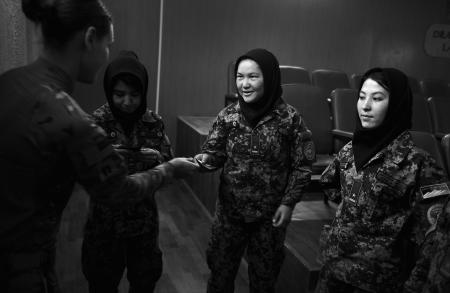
Coalition training

U.S. Air Force Capt. Vanessa Vanden Bout, 439th Air Expeditionary Advisory Squadron, gender integration advisor and force support squadron advisor, hands out patches to the Afghan Air Force female maintenance officers at Kabul, Afghanistan, International Airport, May 22, 2012. The patches had the American and Afghanistan flag together along with the word sisters in Dari and English. Vanden Bout, deployed from 3rd Air Force, Ramstein, Germany, has worked in getting more women into the Afghan Air Force. The Vermilion, Ohio, native has worked with the Afghan female officers and wanted to show a sign of appreciation and welcome with the patches.